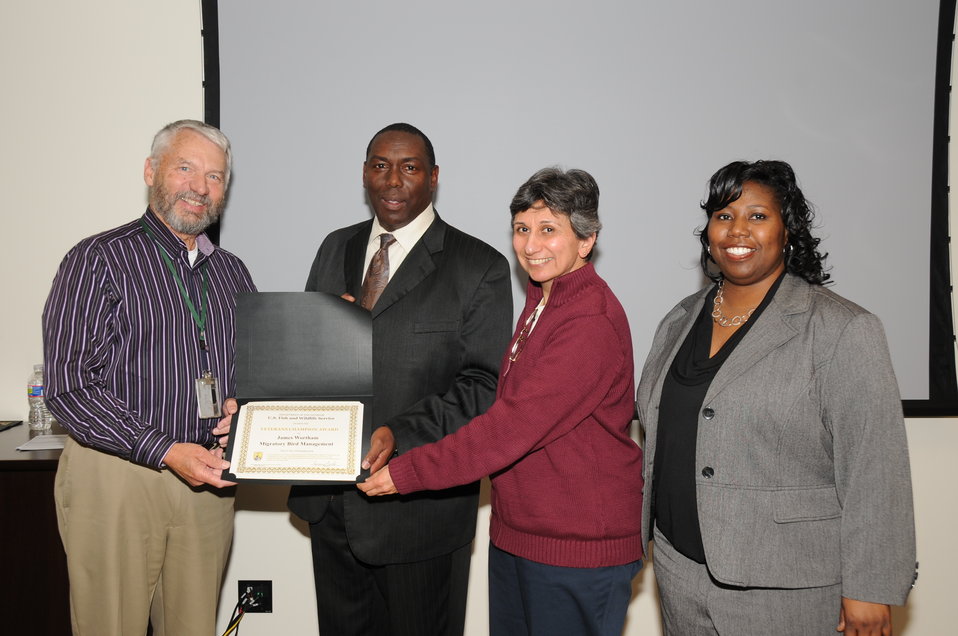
Honoring and Celebrating our Veterans

11.07.2012 Employees gathered in the Arlington Office to honor FWS Veterans